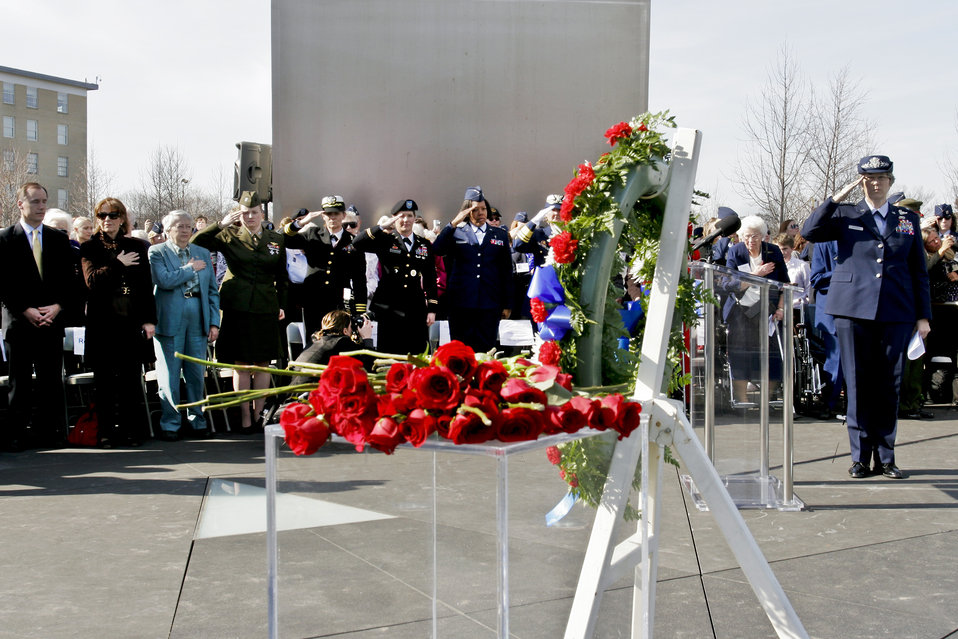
Women pilots of World War II inspired generations

Women Airforce Service Pilots of World War II, military members and guests salute a wreath and roses dedicated to the 38 out of 1,102 women pilots who died during service to their country during a ceremony March 9, 2010, at the Air Force Memorial in Arlington, Va. The ceremony was part of an event in which all pilots will be awarded the Congressional Gold Medal at the U.S. Capitol. The women were civilian pilots and the first to fly military aircraft under the direction of U.S. forces. Fewer than 300 women are alive and more than half were expected to attend the events.